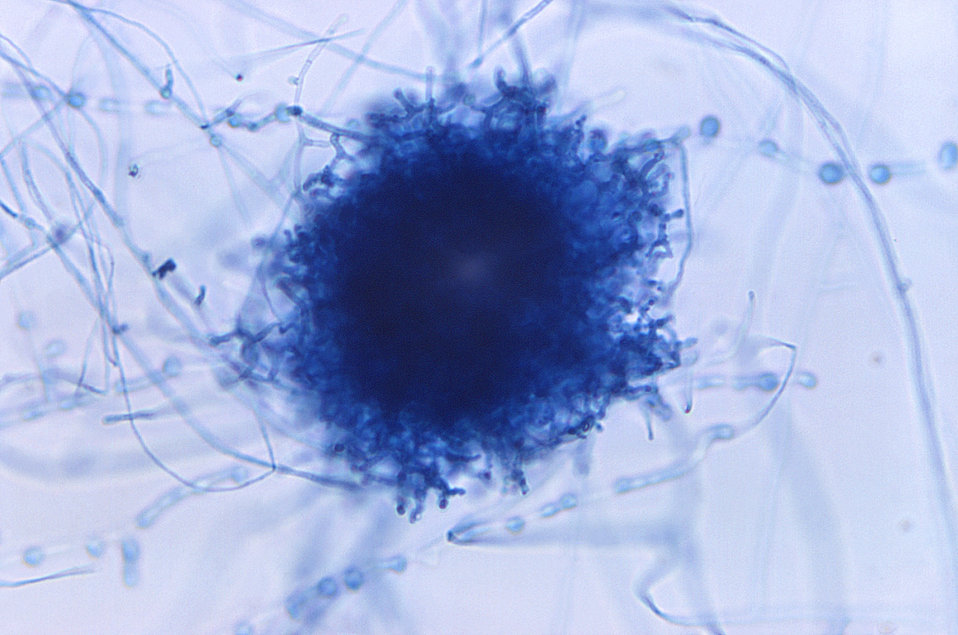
Under a relatively-low magnification of 125X, this photomicrograph revealed some of the ultrastructural morphology displayed by a developing young Gymnoascus demonbreunii cleistothecium, including the tightly-woven hyphae of this fungus.